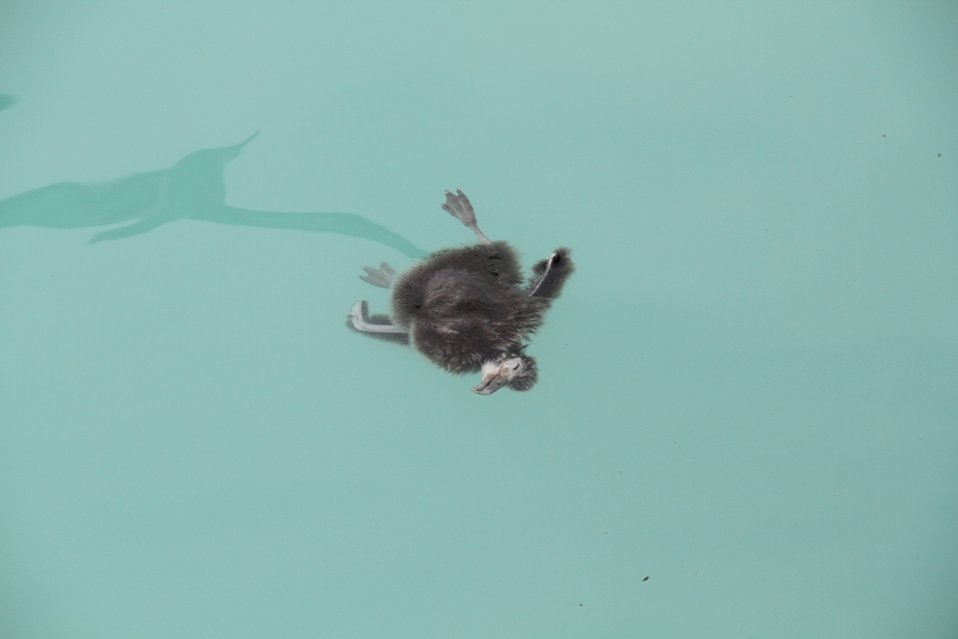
Adult albatross observes drowned chick on Midway after tsunmani

An albatross chick floats in the harbor on Sand Island a day after a tsunami impacts most wildlife on Midway Atoll.